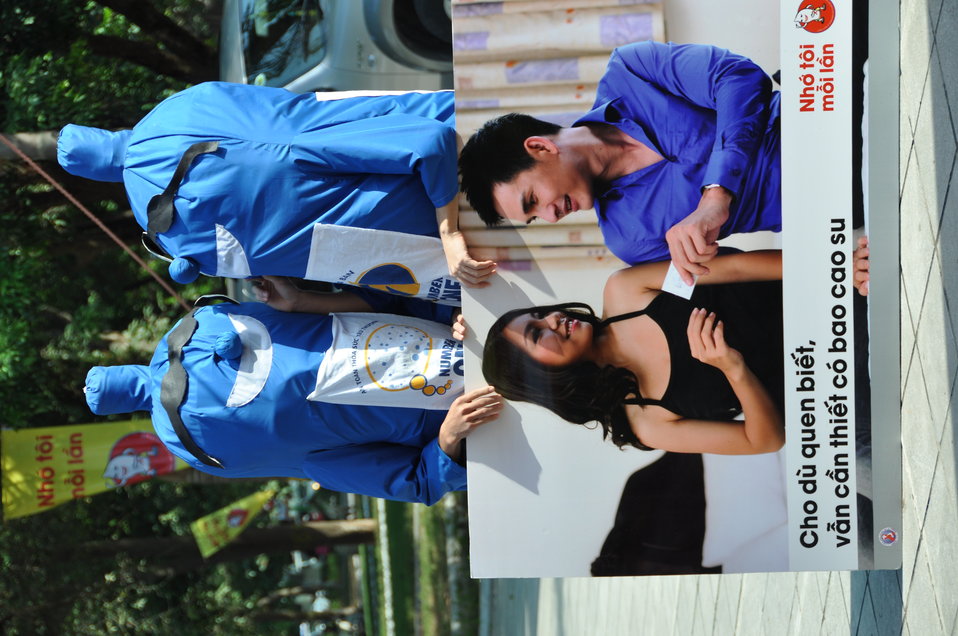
100% Condom Use Campaign Launch, Dec. 2, 2011